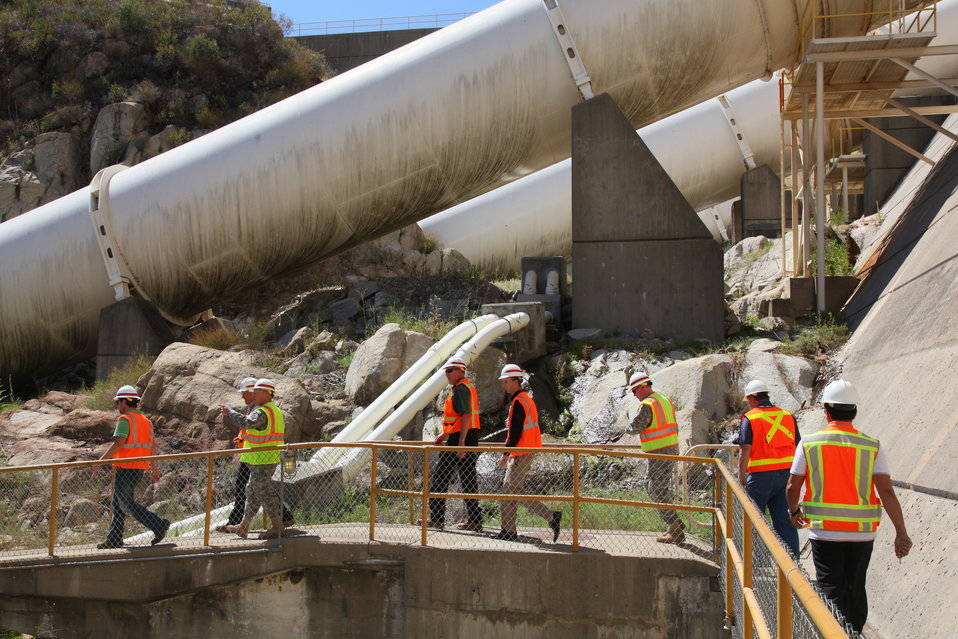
CSM Buxbaum takes a walking tour of Folsom dam

The Bureau of Reclamation provided a walking tour of Folsom Dam in Folsom, Calif., to Command Sgt. Maj. Micheal Buxbaum, U.S. Army Corps of Engineers Command Sergeant Major, and other Corps officials July 19, 2011. “It’s interesting to learn how other agencies operate,” said Buxbaum as he and other Sacramento District officials toured the inner workings of the dam and its hydropower operations.